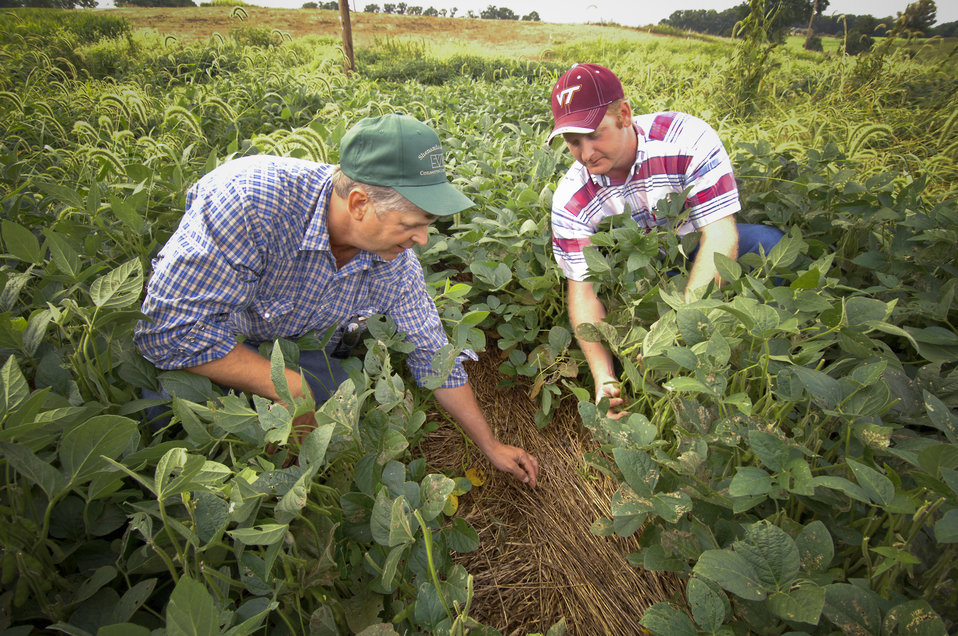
Farmers in a Rockingham County, Virginia check the results of no-till farming in their fields on September 9, 2008, as part of their participation in the U.S. Department of Agriculture (USDA) Natural Resource Conservation Service (NRCS) Chesapeake Bay Watershed Initiative (CBWI). CBWI is voluntarily program that farmers, ranchers and forestland owners install conservation practices on hundreds of thousands of acres annually to help support rural economies, protect wildlife habitat and improve water quality in the Chesapeake Bay Watershed. No-till farming is a way of growing crops from year to year without disturbing the soil through tillage. No-till is an agricultural technique, which increases the amount of water and organic matter (nutrients) in the soil and decreases erosion.